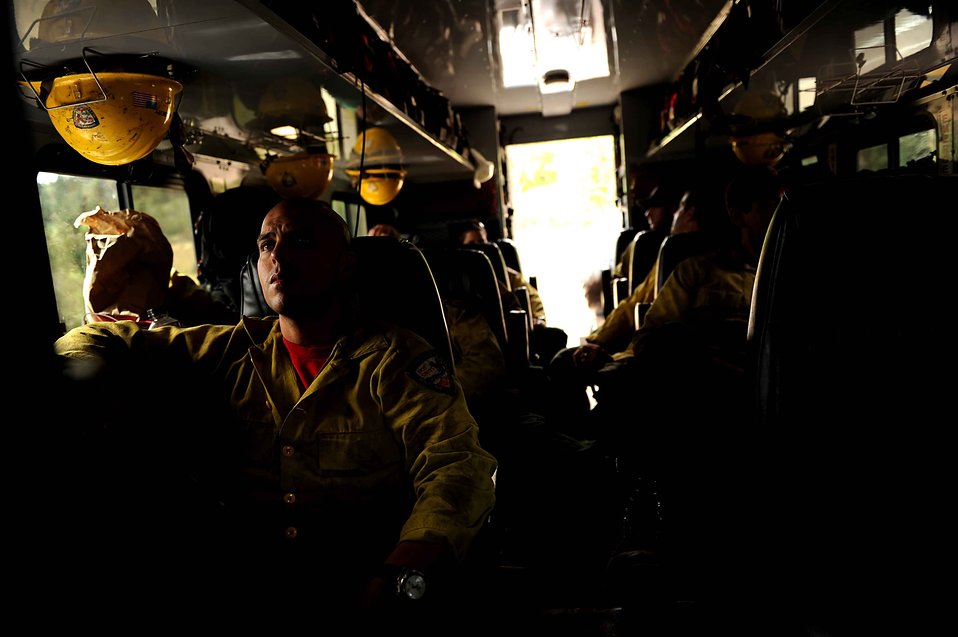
The wait

Sitting in their truck, firefighters from the Vandenberg Air Force Base, Calif., Hot Shots wait for the call to begin cutting a fire line in the Mount Saint Francois area of Colorado Springs, Colo., on June 28, 2012. The team is helping to battle several fires in Waldo Canyon.